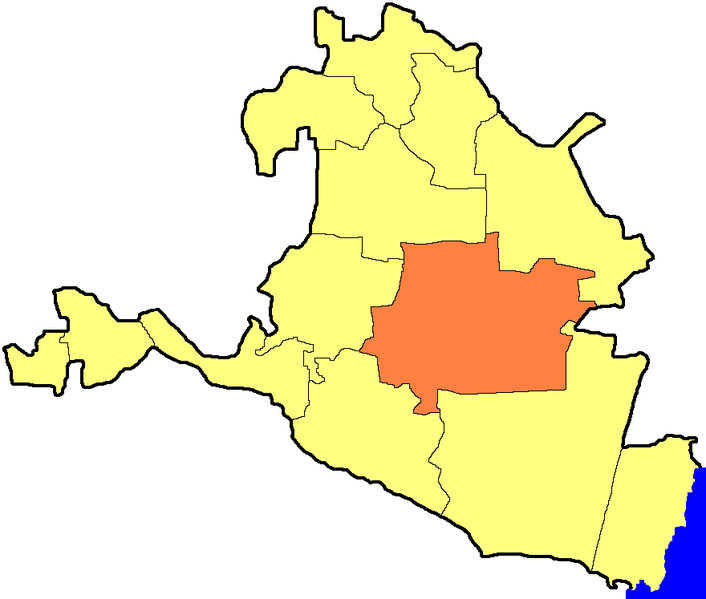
Русский: Яшкульский район на карте Калмыкии {{en:Yashkulsky District in Kalmykia}} Хальмг/Өөрдин/ᡆᡕᡅᠷᠠᡑ: Яшкульск район